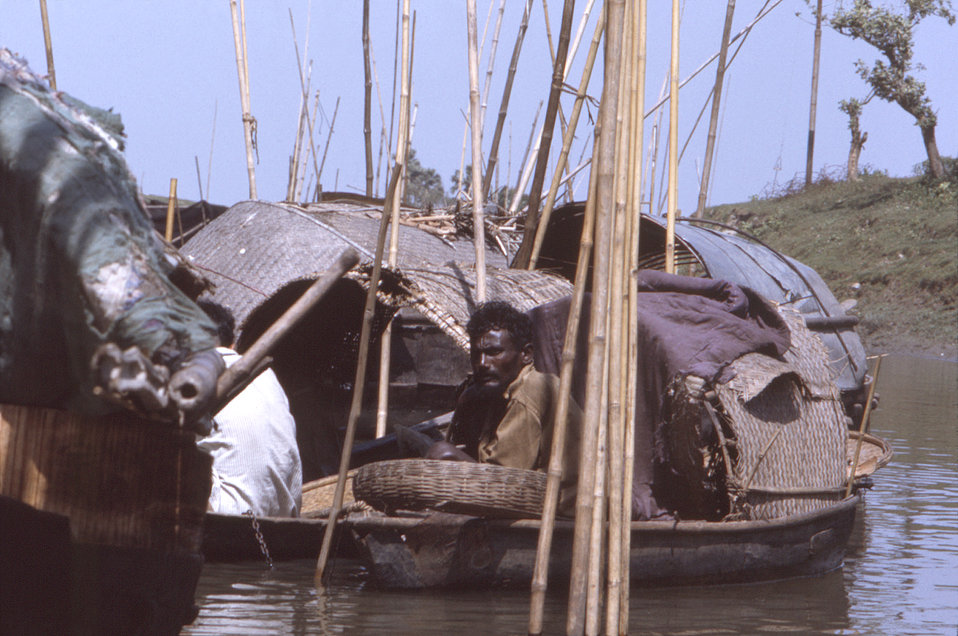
Photographed sometime in the early 1970s, during the worldwide smallpox eradication campaign, this image depicted a man in a boat on his way to the char (island) sub-district of Romari, located in northeast Bangladesh.The Disease